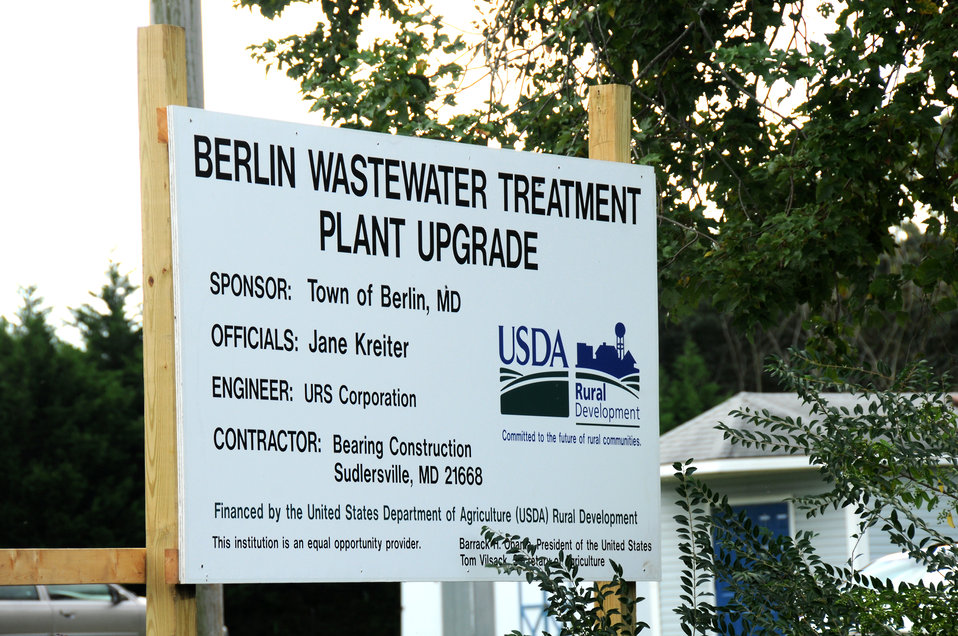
The town of Berlin, Maryland began construction on a $16 million dollar American Recovery and Reinvestment Act (ARRA) project on Friday, October 2, 2009. The funds are a combination of loan and grant funds through the U.S. Department of Agriculture (USDA) Rural Development (RD) agency. This project will upgrade the wastewater treatment system for the local residents and create jobs in the local community.